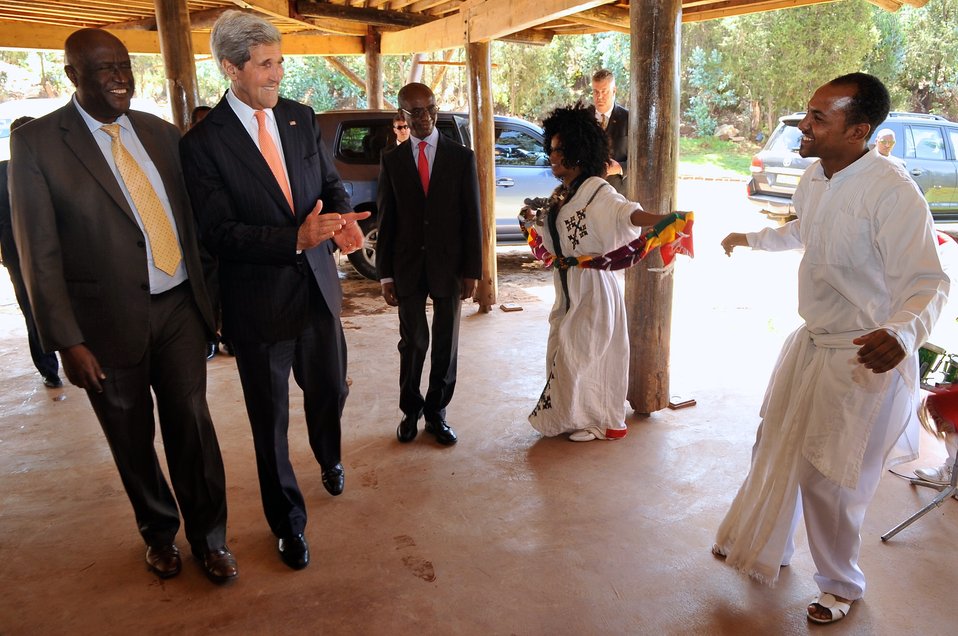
Secretary Kerry Observes Traditional Ethiopian Dancers, Musicians Before Africa Speech

U.S. Secretary of State John Kerry observes traditional Ethiopian dancers and musicians before delivering a speech about Africa policy in a botanical garden outside Addis Ababa, Ethiopia, on May 3, 2014.